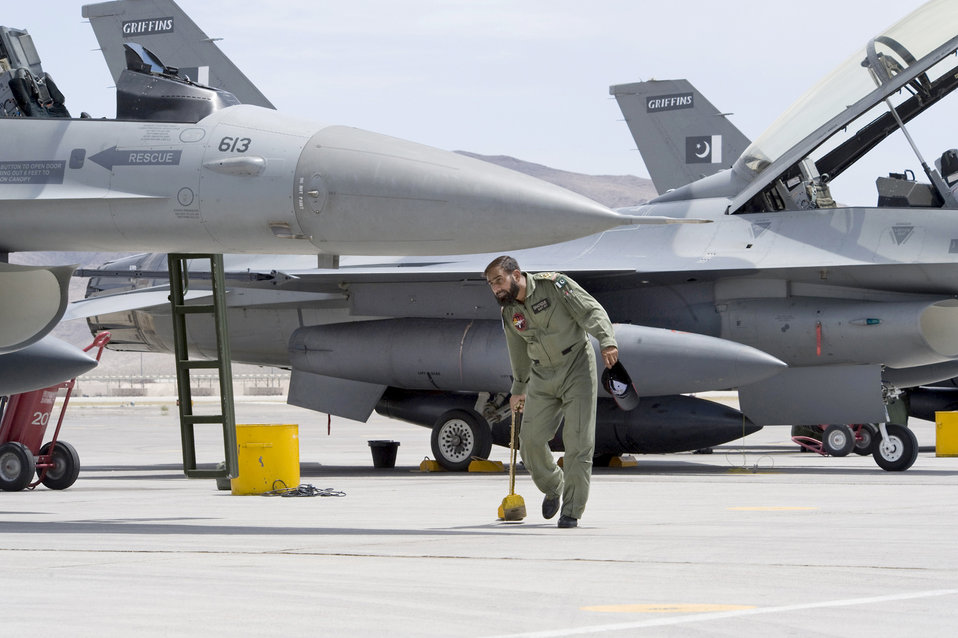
Pakistan air force Red Flag Exercise

A Pakistan air force crew chief chalks an F-16 upon arrival for a Red Flag exercise July 16, 2010, at Nellis Air Force Base, Nev. The team stopped at Lajes Field, Azores, July 14 through15 to refuel and bed down their crew before heading to Nellis AFB. This is the Pakistan air force's first time participating in Red Flag.